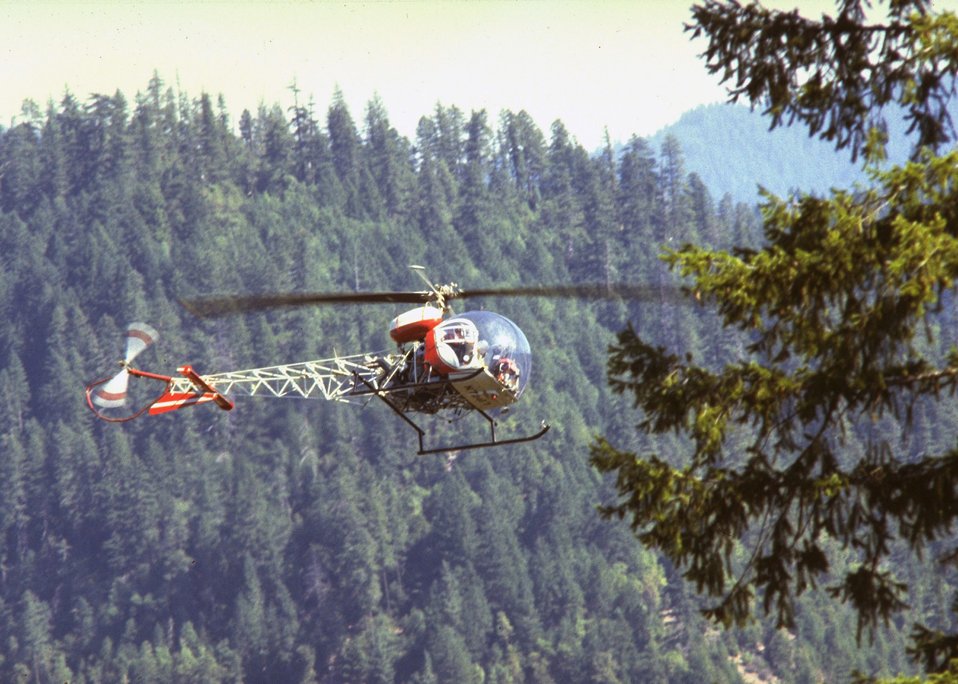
Helicopter.